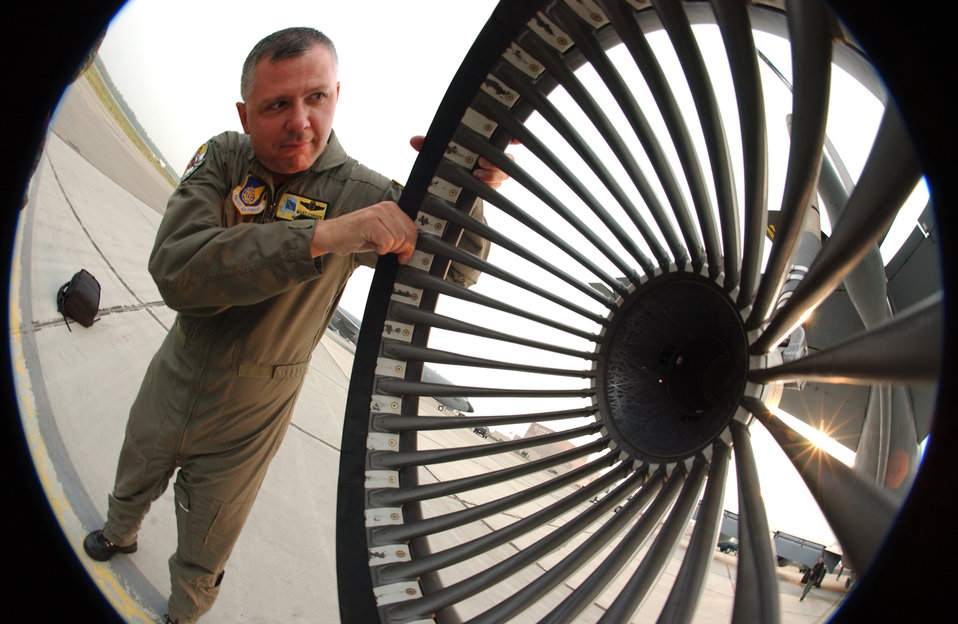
Drogue check

EIELSON AIR FORCE BASE, Alaska -- Master Sgt. Steven Forgue inspects a drogue refueling basket on a KC-135R Stratotanker before taking off for a refueling mission in support of Cooperative Cope Thunder 2004-01 here July 21. Sergeant Forgue is a boom operator with the Alaska Air National Guard's 168th Air Refueling Squadron.